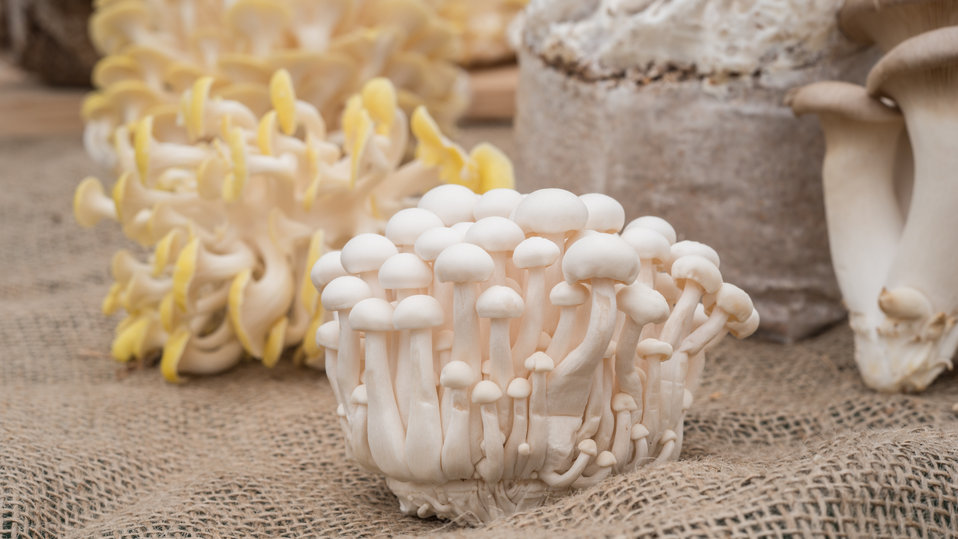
(Left - right) Yellow oyster (yellow and white), beech (small button cap), and royal trumpet (large stem), mushrooms on display at the U.S. Department of Agriculture (USDA) farmers markets and Harvest Festival at the USDA Whitten Building east parking lot in Washington, DC, on Friday, November 22, 2013.